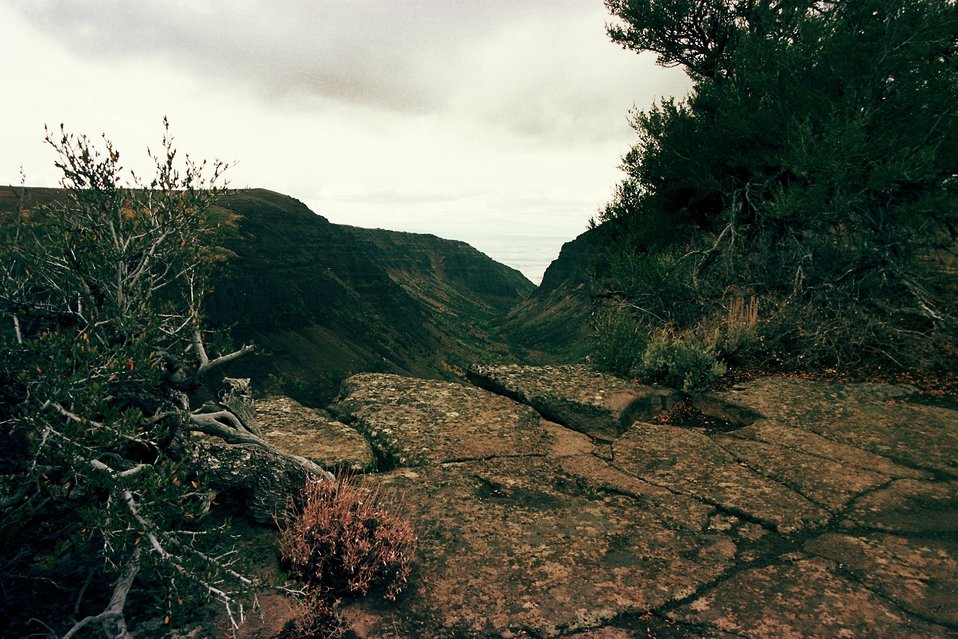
Little Blitzen near Pratt Overlook, Steen's Mountain.